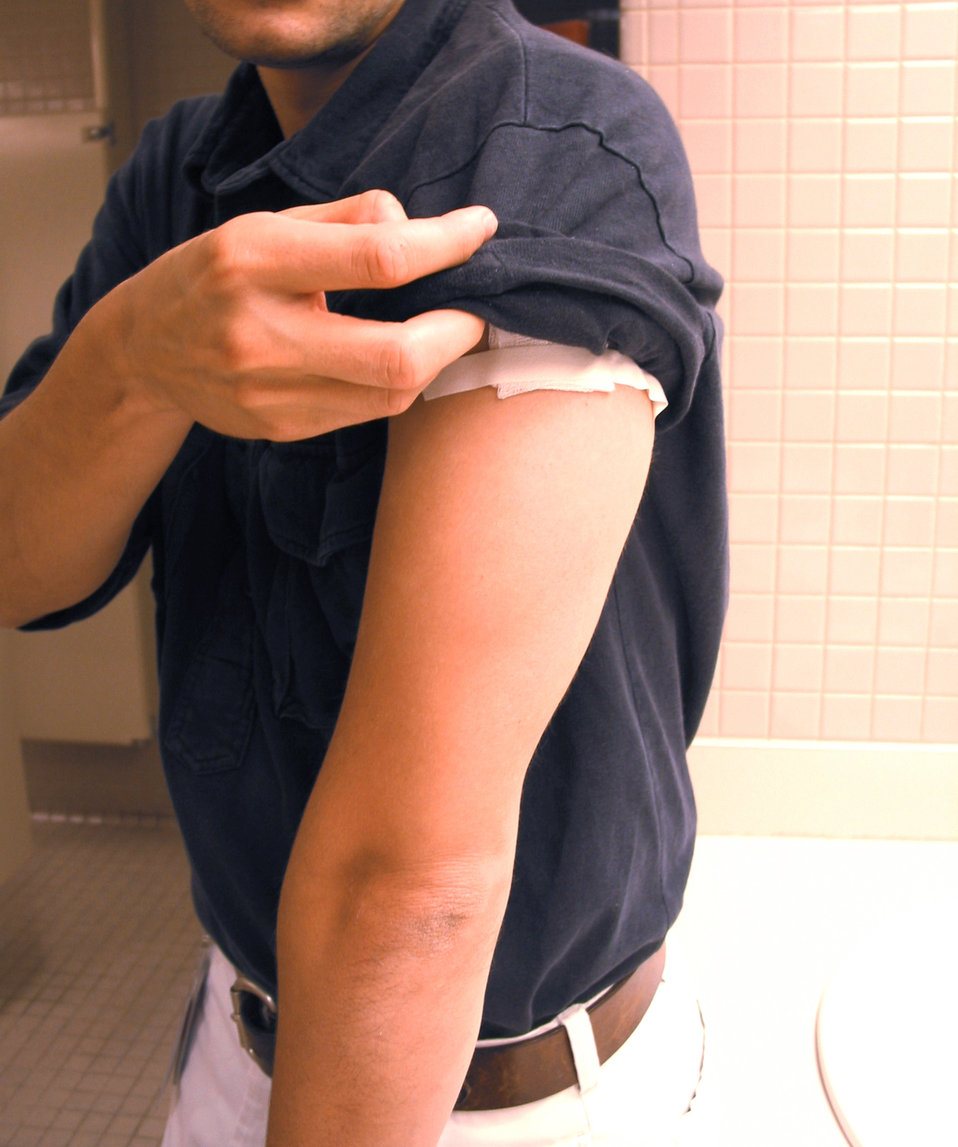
This demonstrates how a smallpox vaccinee covers his vaccination site with a gauze bandage, medical tape and his shirt sleeve.